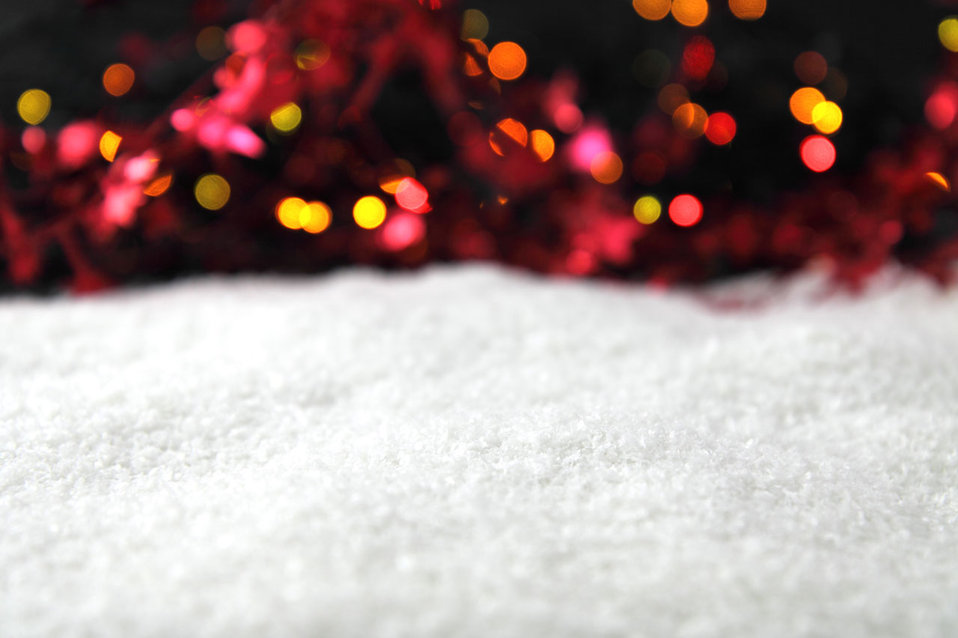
Christmas background

Christmas picture with snow and lights in the background..